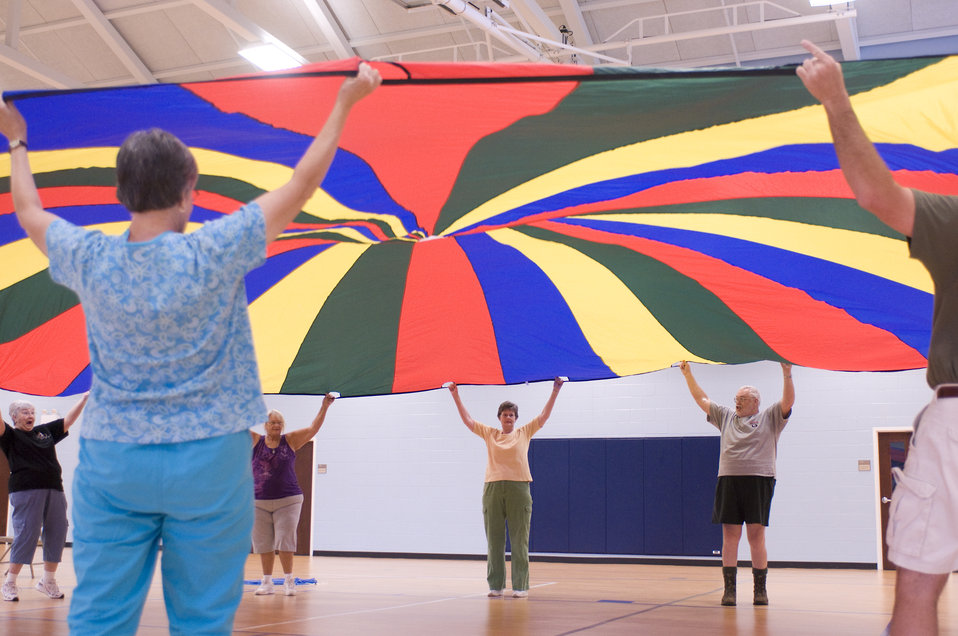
The older individuals pictured here on the wooden floor of an indoor basketball court, were participating in an exercise class consisting of stretching, and aerobic repetitive motion movements. In this particular view, the group members were working the muscles of their shoulders and arms by raising their outstretched arms over their heads then back down again, repeating this motion, while they held on to a large multicolored tarpaulin, which had been equipped with handles along its rim.